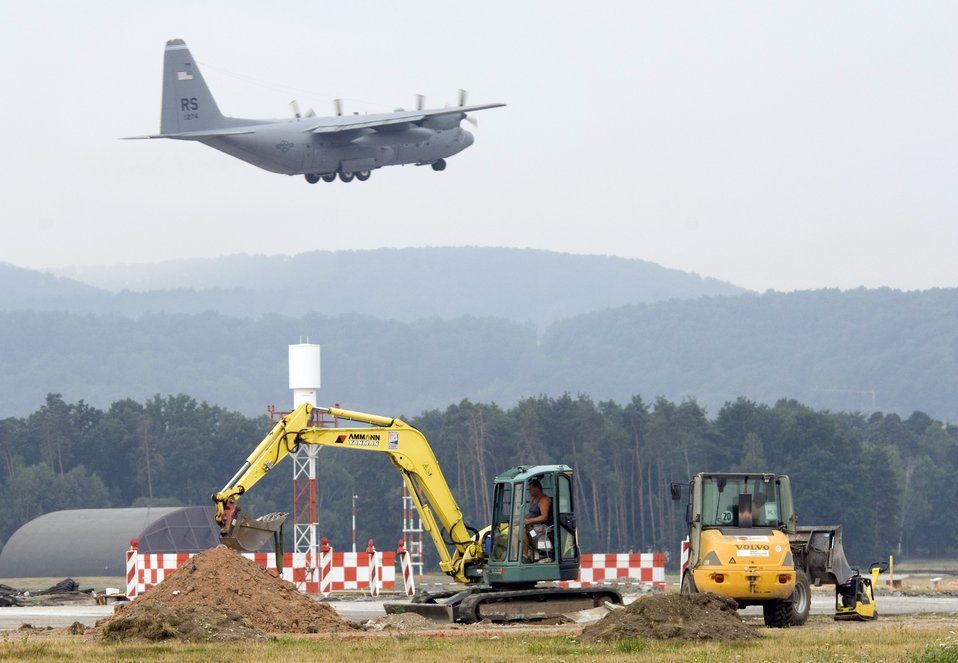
Ramstein's north airstrip receives makeover

A C-130 Hercules uses the south runway as construction continues on the north runway at Ramstein Air Base, Germany, on July 28. The north runway will be extended 1,000 feet, allowing heavy air transports to take off fully loaded. The work began in mid-April and is one week ahead of the Jan. 1 completion date.